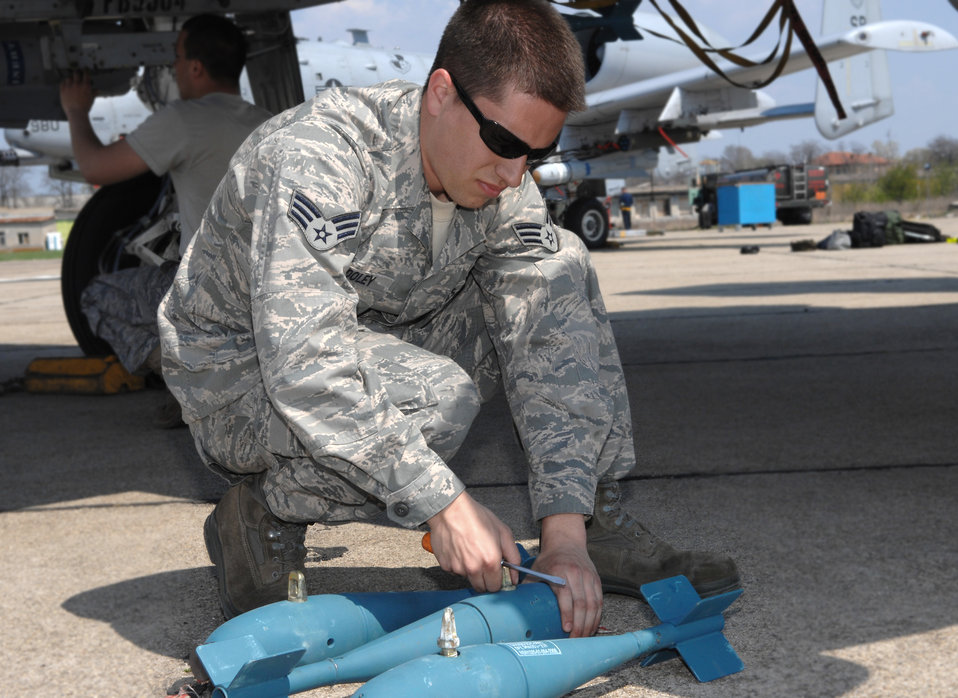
Airmen turn empty Bulgarian hangar into A-10 hub

Senior Airman Ryan Wooley prepares practice bombs for loading onto an A-10 Thunderbolt II prior to a training mission April 16 at Bezmer Air Base, Bulgaria. A maintenance squadron team deployed to Bezmer AB to support a U.S. and Bulgarian air forces training exercise. Airman Wooley is a 52nd Aircraft Maintenance Squadron weapons load crewmember.